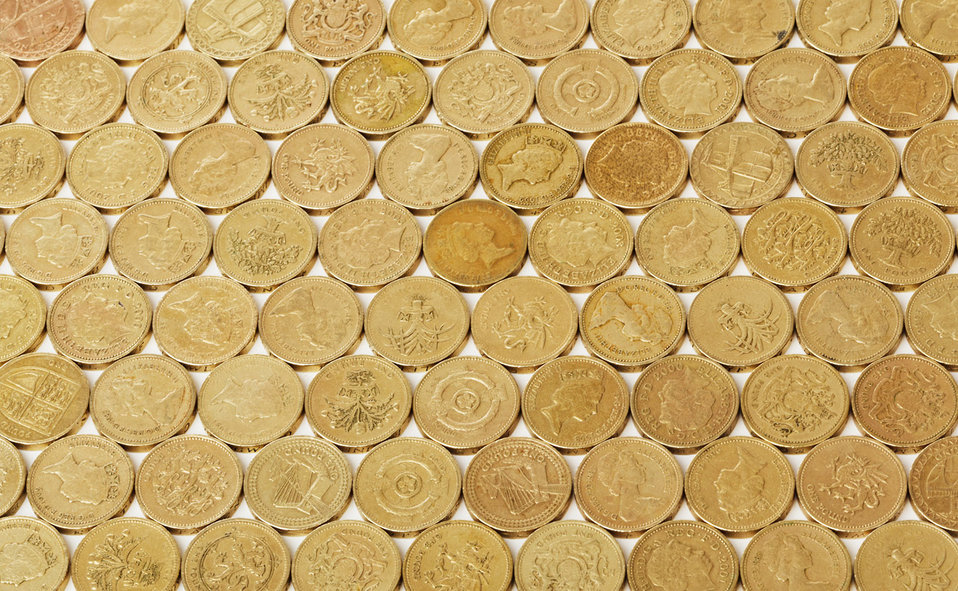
Golden coins background

Golden pattern made from british one pound coins.